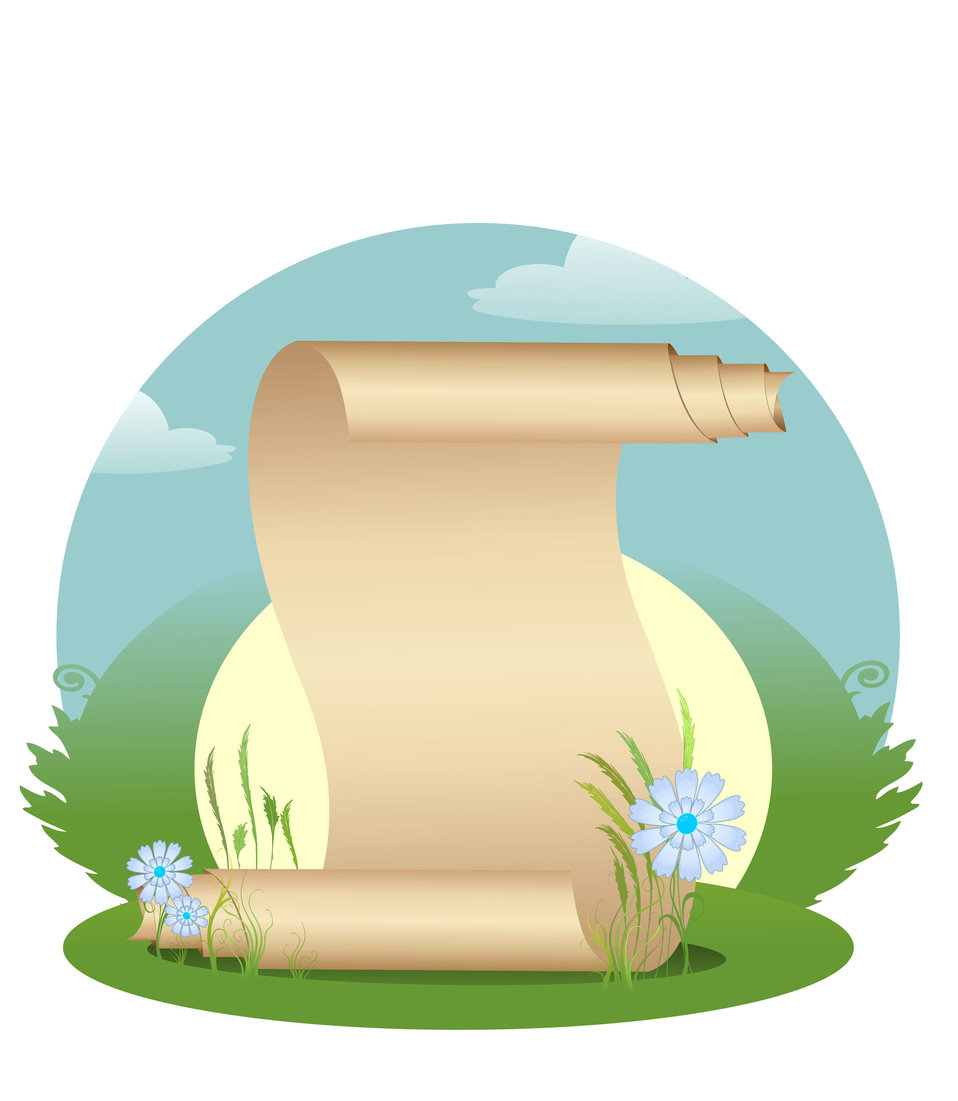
Postcard with a roll of paper

Scroll of paper on an abstract background.